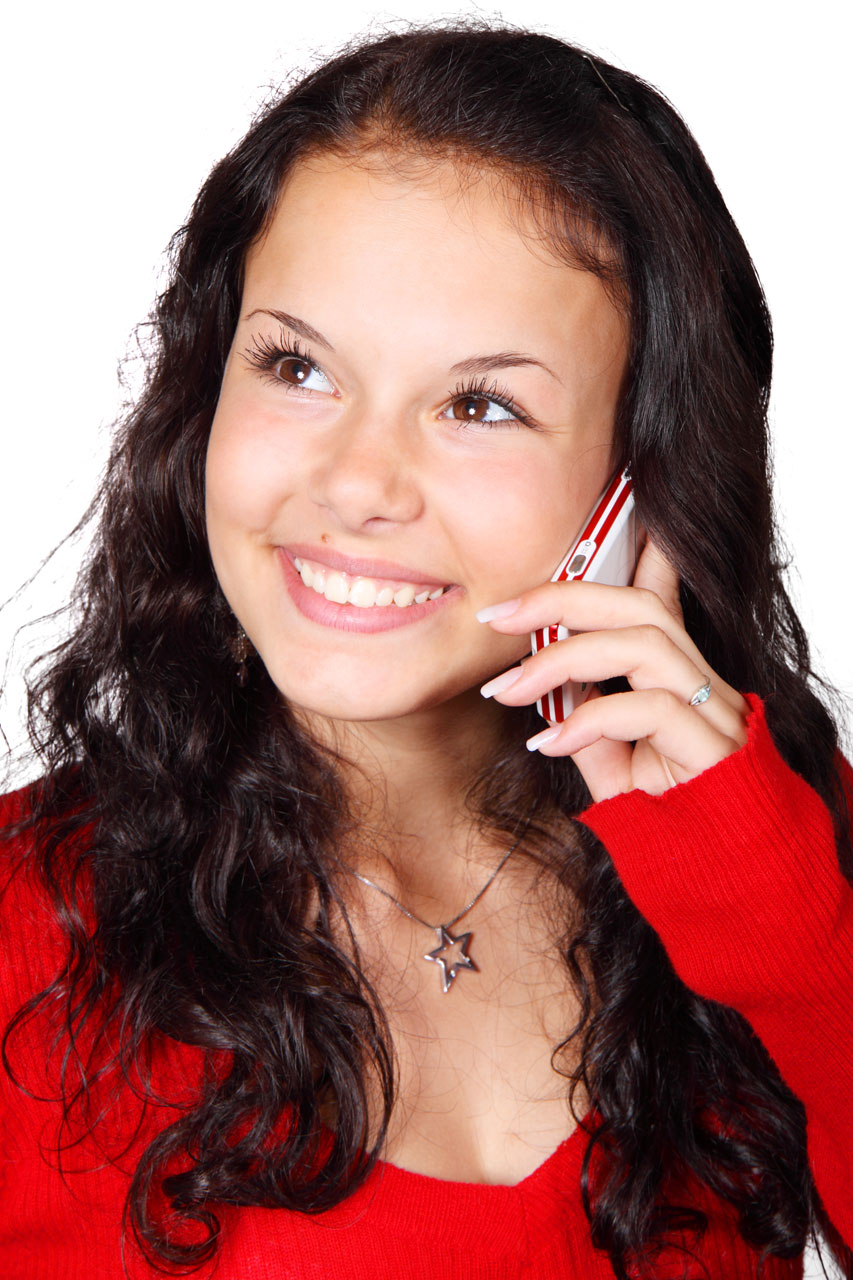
Woman and cellphone

Young woman talking on her cell phone.